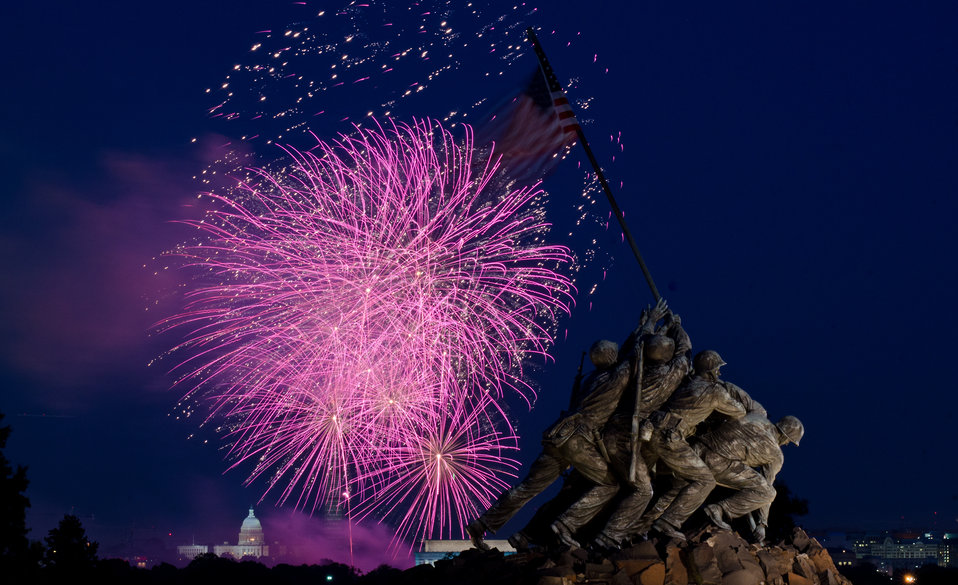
Independence Day celebration fireworks are seen from the Iwo Jima, U.S. Marine Corps Memorial in Arlington, VA on Jul. 4, 2013. In the distance are the Lincoln Memorial, the U.S. Department of Agriculture (USDA) Yates Building (dark red brick building), the Washington Monument (with scaffolding), and the U.S. Capitol building in Washington, D.C.